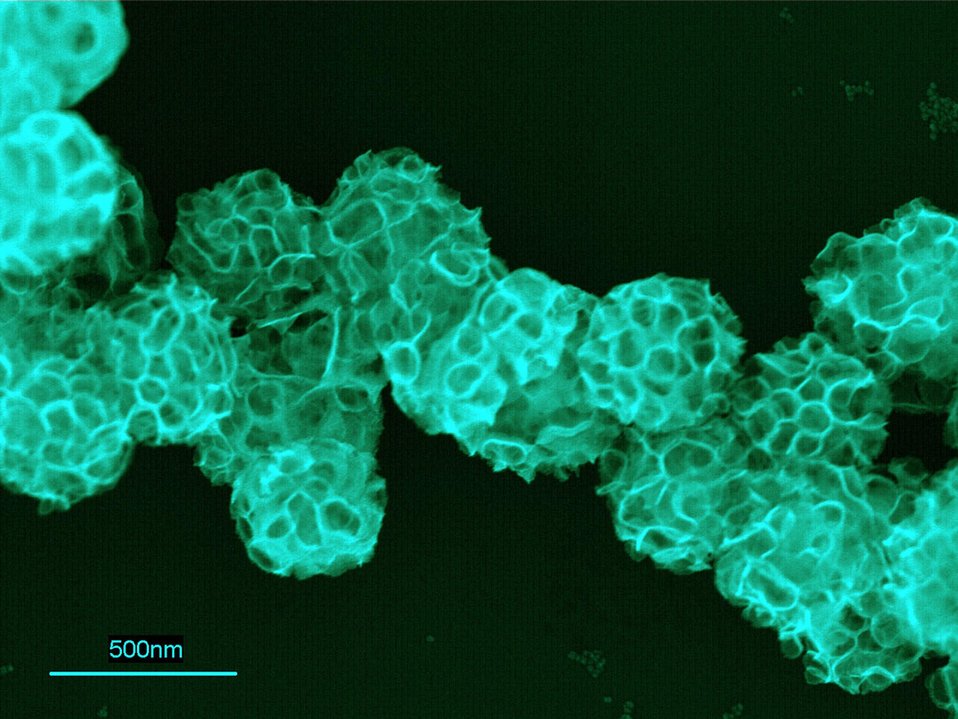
A SCANNING MICROSCOPE IMAGE OF PLATINUM-LACE NANOBALLS. LIPOSOMES AGGREGATE, PROVIDING A FOAMLIKE TEMPLATE FOR A PLATINUM SHEET TO GROW.

DOE'S SANDIA NATIONAL LABORATORIES AND THE UNIVERSITY OF NEW MEXICO CENTER FOR MICROENGINEERED MATERIALS HAVE DEVELOPED A NEW WAY OF MIMICKING PHOTOSYNTHETIC PROTEINS TO MANIPULATE PLATINUM AT THE NANOSCALE. THE METHOD HAS THE POTENTIAL TO CHANGE THE METAL'S PROPERTIES AND BENEFIT EMERGING TECHNOLOGIES.